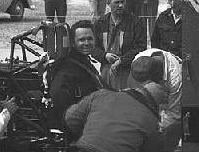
Colonel (Dr.) John Paul Stapp

1950's -- Dr. John Paul Stapp was not only the